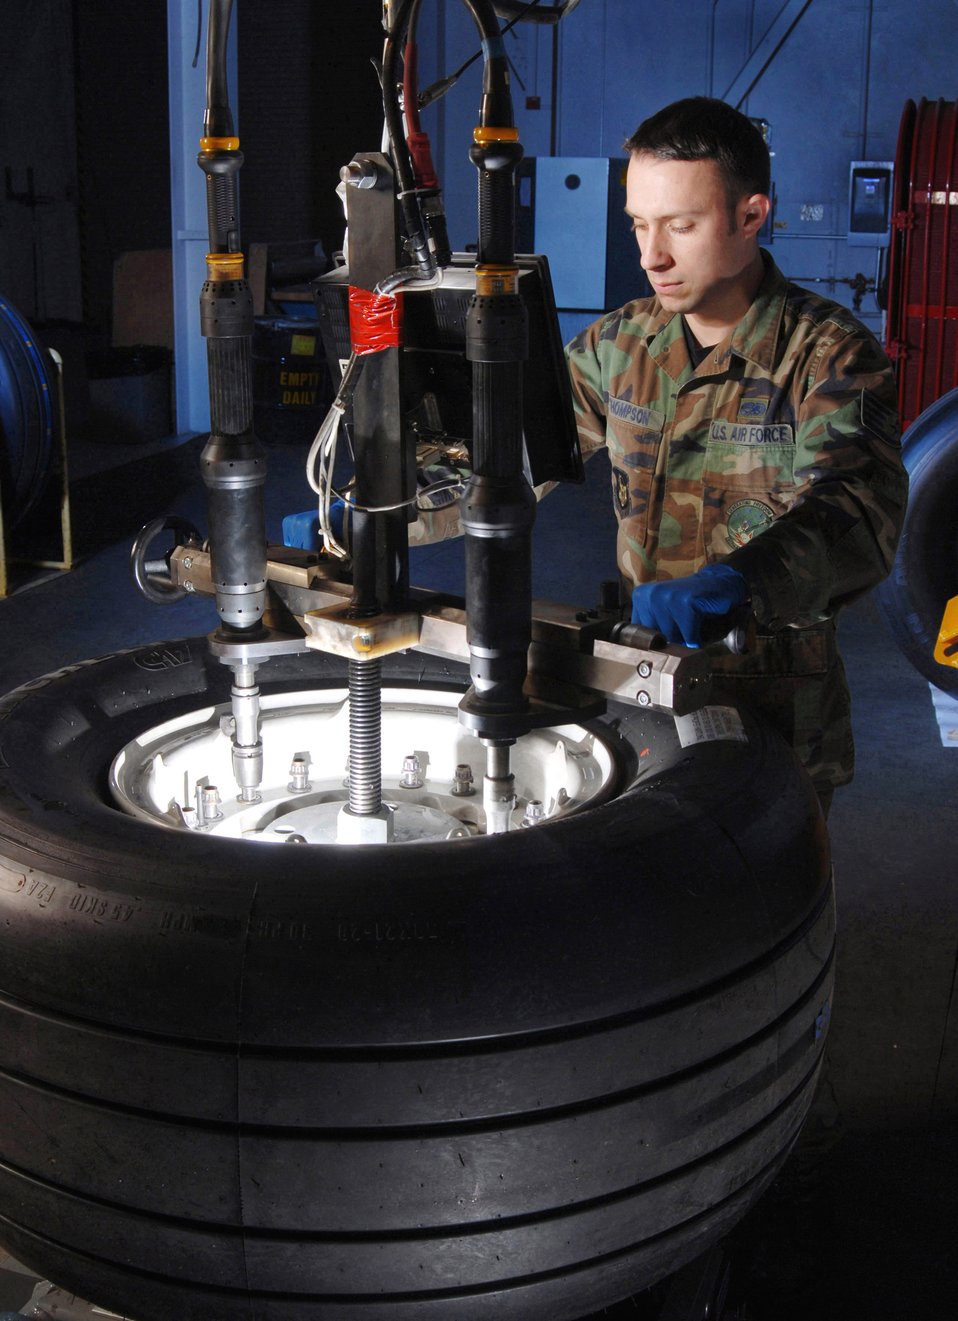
It's time to re-tire

Staff Sgt. Greg Thompson, an aircraft mechanic from the Aero Repair Shop at March Air Reserve Base, Calif., uses a wheel and tire assembly fixture and torquing machine Feb. 3 to mount a tire on a C-17 Globemaster III cargo aircraft wheel. March ARB, located in Southern California, is home to the largest air mobility wing in the Air Force Reserve Command. It also is home to units from the Army Reserve, Navy Reserve, Marine Corps Reserve and Air National Guard.